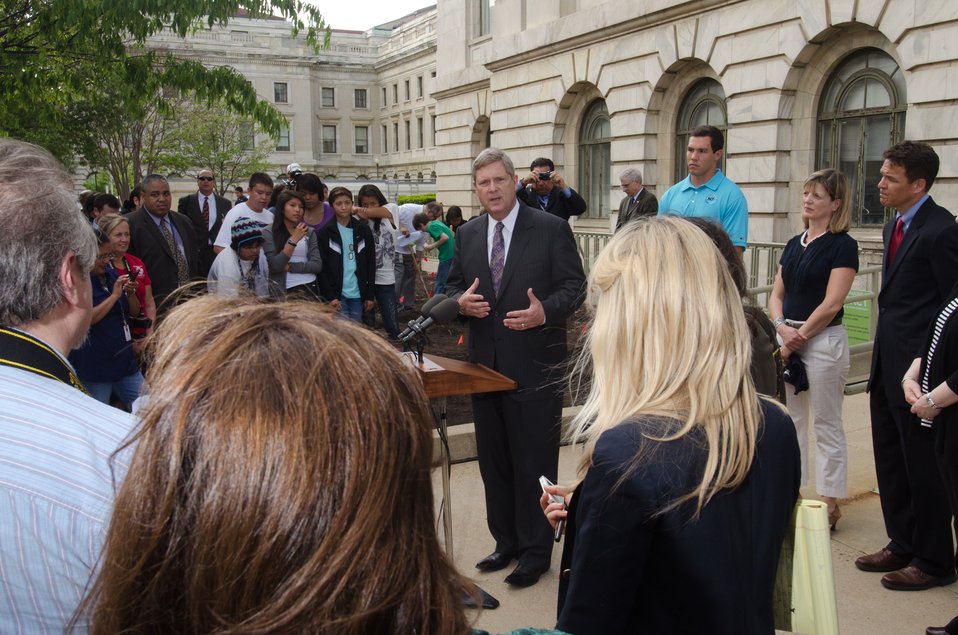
Agriculture Secretary Tom Vilsack (at podium) answers questions after kicking off the first planting of the Roots of American Agriculture garden, part of the Headquarters??? People???s Garden on Wednesday, April 27, 20ll in Washington, DC. To support the event was St. Louis Rams Quarterback Sam Bradford (blue shirt) who earlier encourage Native American Youth to pursue a healthy lifestyle. The seeds used in the garden behind them are vegetable seeds that are indigenous to North America. Bradford is a citizen of the Cherokee Nation.